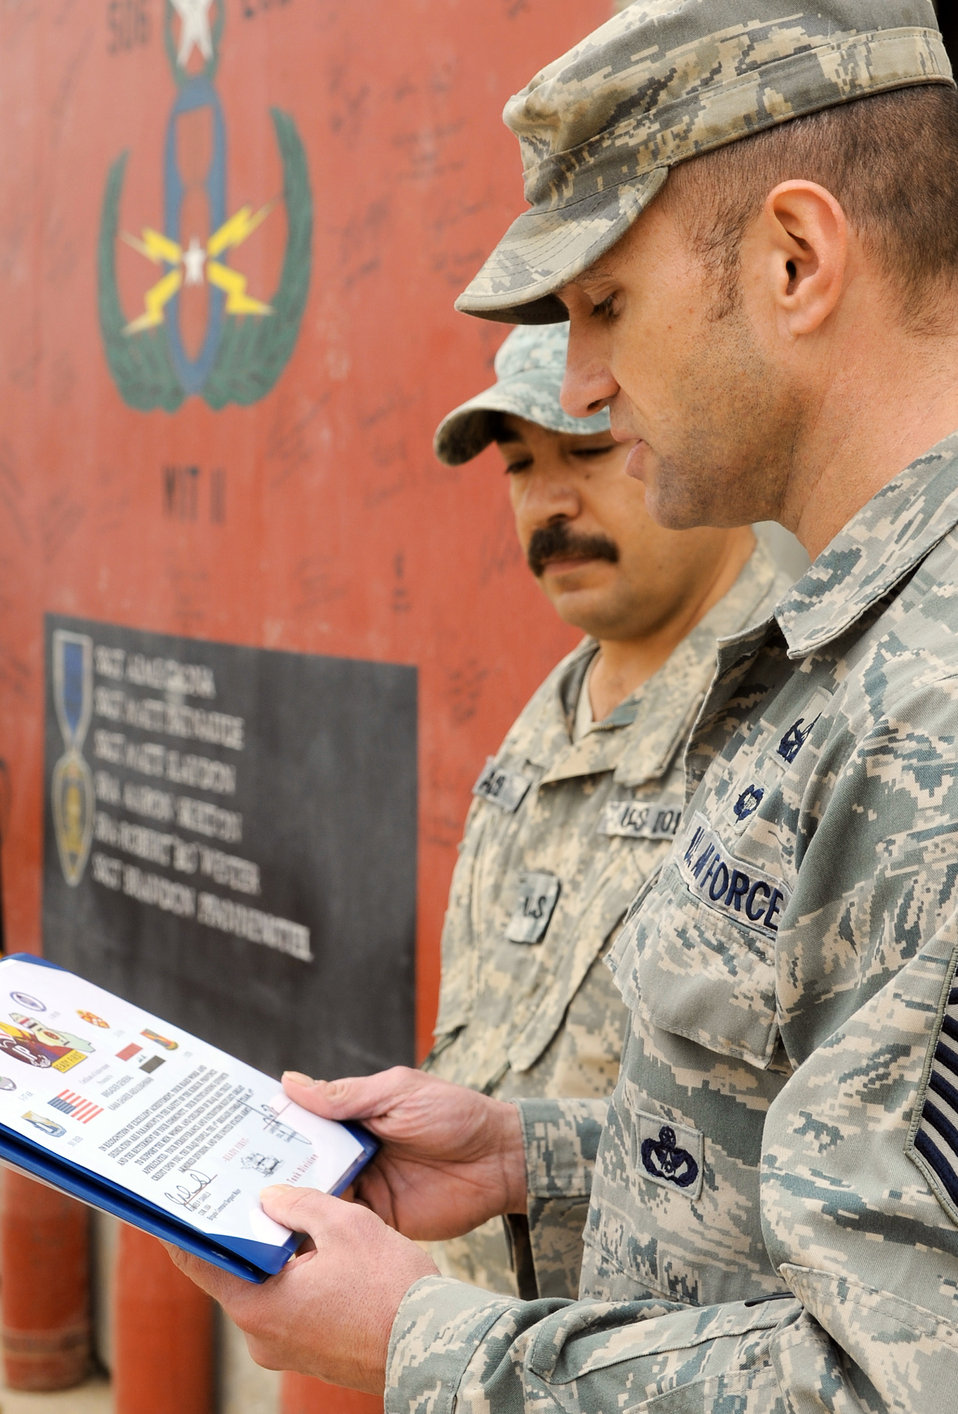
Airmen unveils memorial, raise money to honor families of fallen Iraqi comrades

Members of the 506th Civil Engineer Squadron Explosive Ordnance Disposal team memorialize three Iraqi police counter-explosive team members killed by an Aug. 12, 2009, vehicle-borne improvised explosive device by unveiling a mural painted in their honor Feb. 23, 2010, at the EOD compound at Kirkuk Air Base, Iraq. The families of the fallen were presented donated funds raised during an EOD bomb suit run.